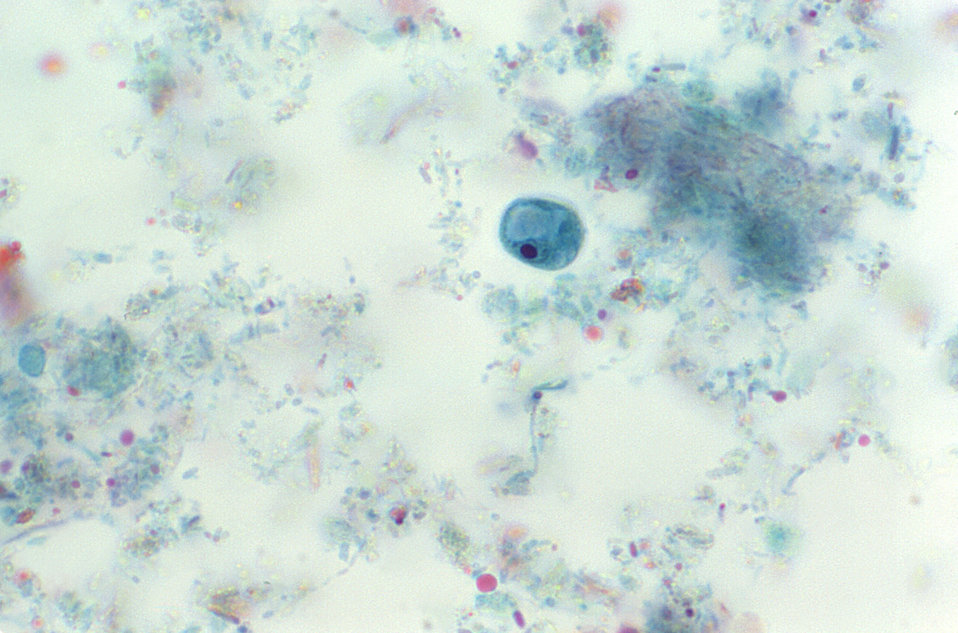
This trichrome-stained photomicrograph depicts a single Iodamoeba buetschlii parasitic cyst within which a large achromatic glycogen vacuole is clearly visible, as well as a single, darkly-stained intranucleic karyosome.